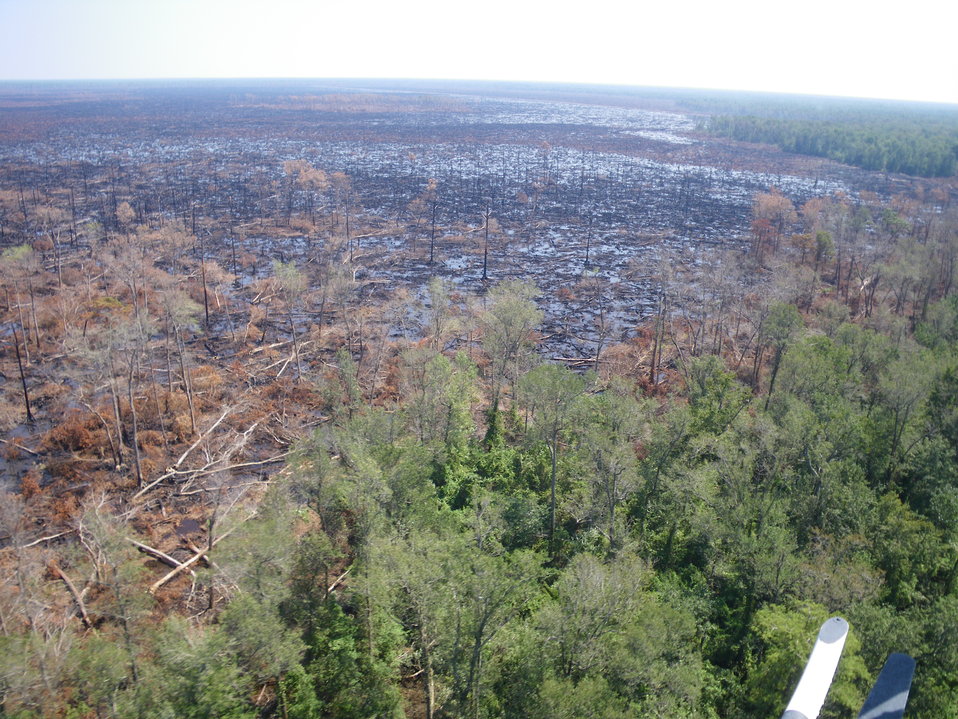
Fire and Hurricane

Suffolk, VA, August 2011: A helicopter flight over the Lateral West Fire burning on Great Dismal Swamp National Wildlife Refuge after Hurricane Irene passed shows the effect of a foot of rain. Although the hurricane doused the area, about 30 small smoky areas were observed in the 6,300-acre fire.